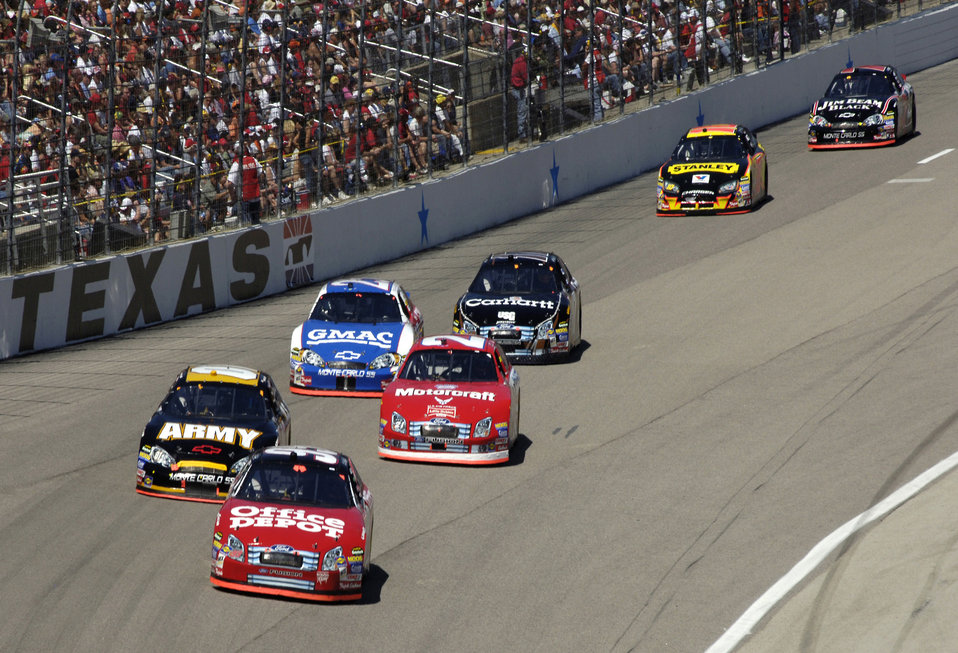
NASCAR thrills

The number 21 Motorcraft/Air Force NASCAR driven by Ken Schrader, encounters traffic through turn four at the NASCAR Nextel Cup, Samsung/RadioShack 500 on Sunday, April 9, 2006, at Texas Motor Speedway. Schrader finished 16th after qualifying 32nd in a field of 43 drivers.